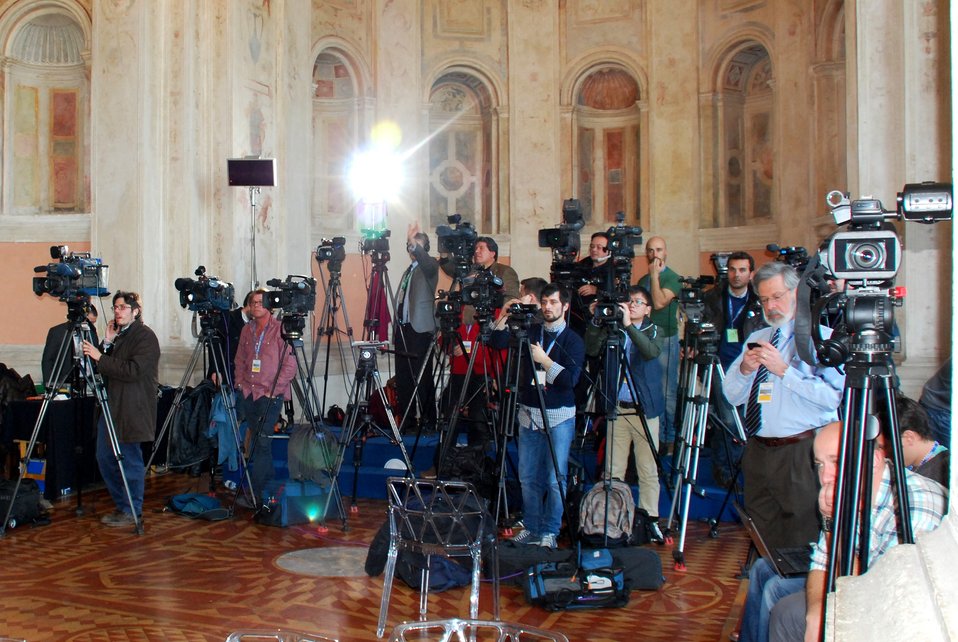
Members of the Press Cover Secretary Kerry's Solo Press Conference

Members of the press snap photographs and record footage of U.S. Secretary of State John Kerry as he gives a statement during a solo press conference in Rome, Italy, on February 28, 2013.